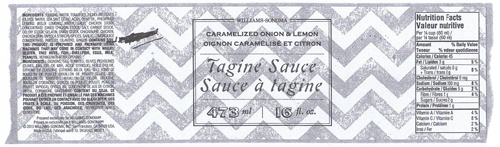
Tagine Sauce

August 28, 2013 – Premier Foods, LLC Announces The Recall Of Products Sold At Williams-Sonoma For Undeclared Allergens.